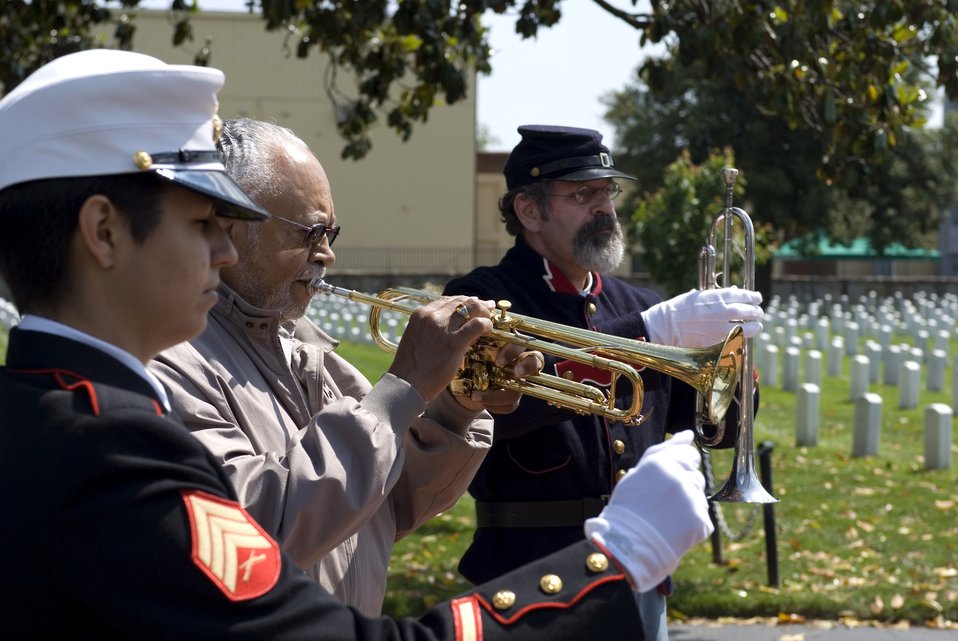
Retired Air Force Senior Master Sgt. Bob Ransom Jr. (center) and Kevin Ritton, a Civil War reenactment performer with the 79th New York Volunteer Infantry, play